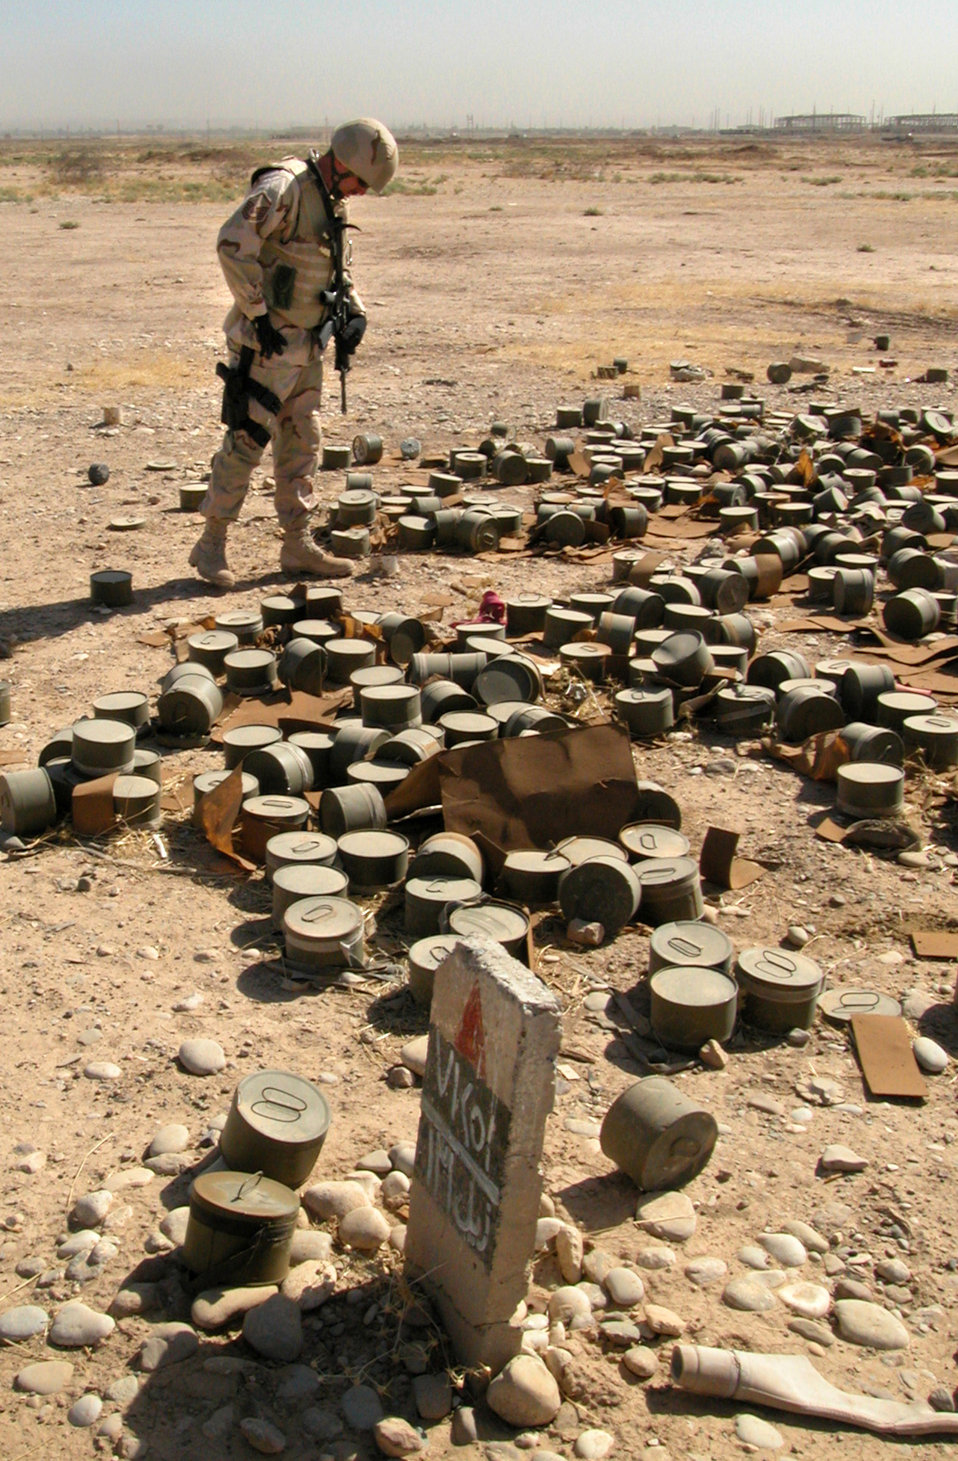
Remnants of the Republican Guard

KIRKUK, Iraq -- Master Sgt. Dale Griffin examines a few of the 621 smoke generators discovered on a former Republican Guard facility here. The devices were removed and destroyed. Griffin is an explosive ordnance technician deployed from March Air Reserve Base, Calif.